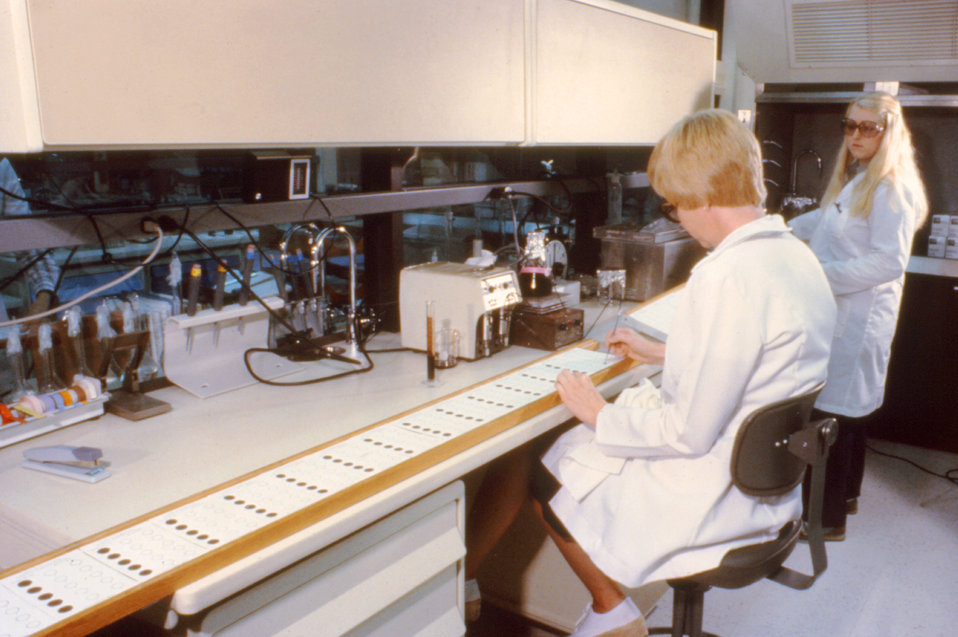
These laboratorians are preparing quality control materials to be used in neonatal hyperthyroid screening.